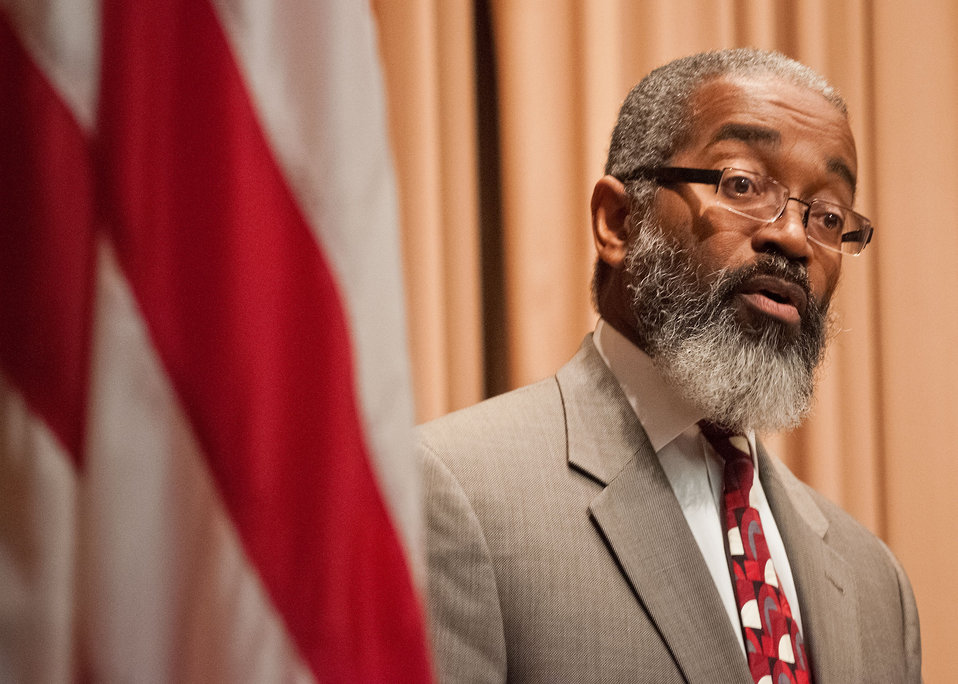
Agriculture Acting Assistant Secretary for Administration Dr. Gregory Parham offers opening remarks at the U.S. Department of Agriculture's (USDA) 2012 National Disability Employment Awareness celebration in the Jefferson Auditorium at USDA in Washington, D.C. on Wednesday, Oct. 17, 2012. The theme for the event was, “A Strong Workforce is an Inclusive Workforce: What Can You Do?